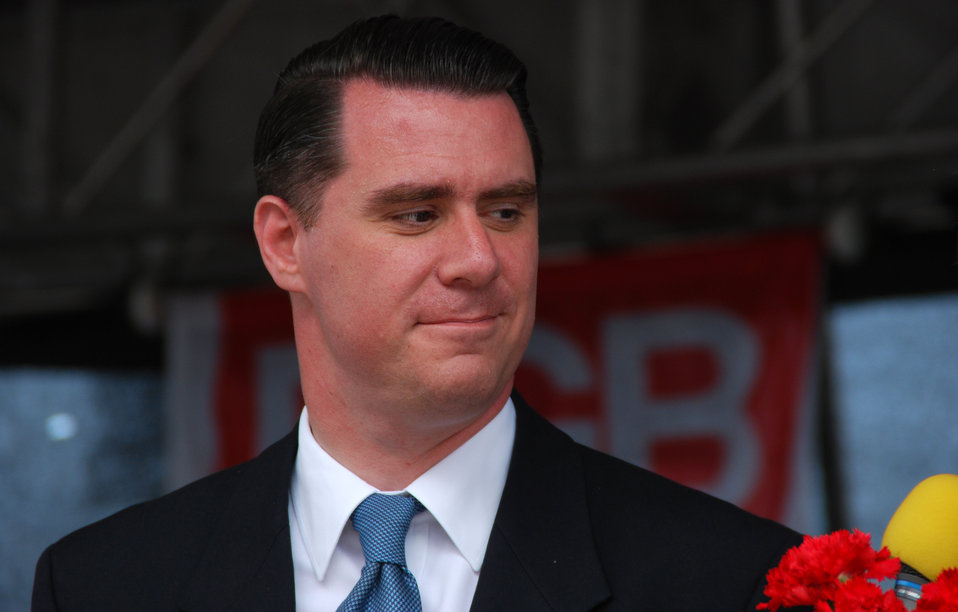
Andrej Hermlin, Deutscher Pianist und Bandleader